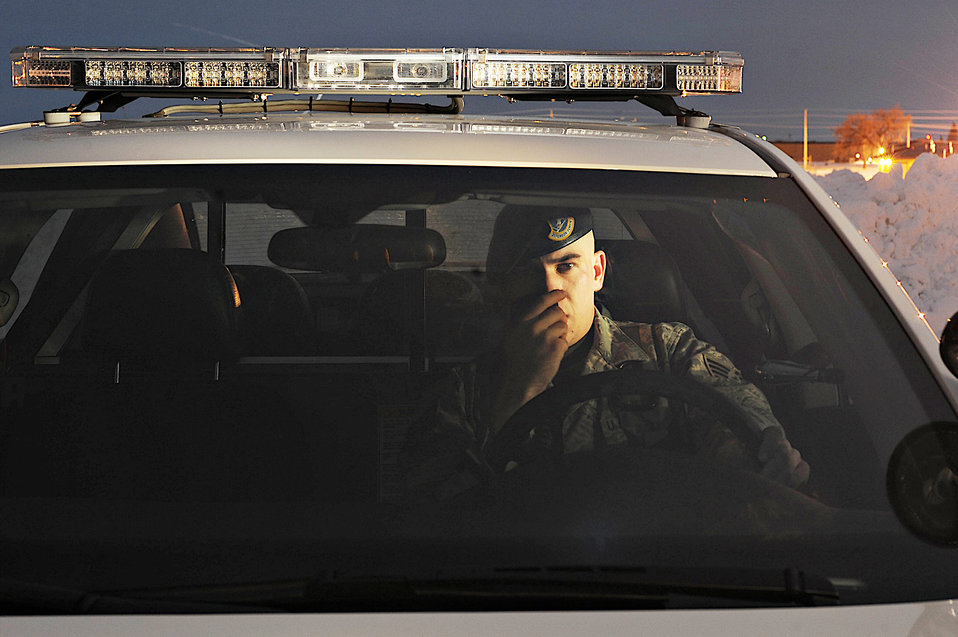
All clear, over

Staff Sgt. Joseph Vawter, a 28th Security Forces Squadron patrolman, reports conditions while patrolling Ellsworth Air Force Base, S.D., Dec. 31, 2009. Sergeant Vawter, along with other security forces, ensures the safety of members on the base.